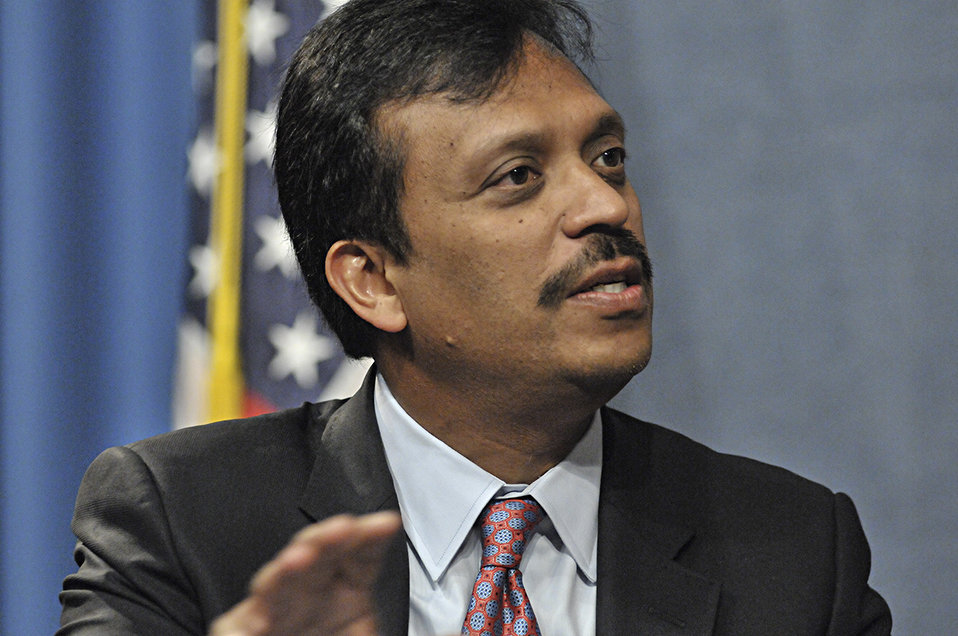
Panel: Increasing Minority Participation in the Energy Sector

Opportunities and Solutions panel at the Minorities in Energy Initiative, September 24, 2013.